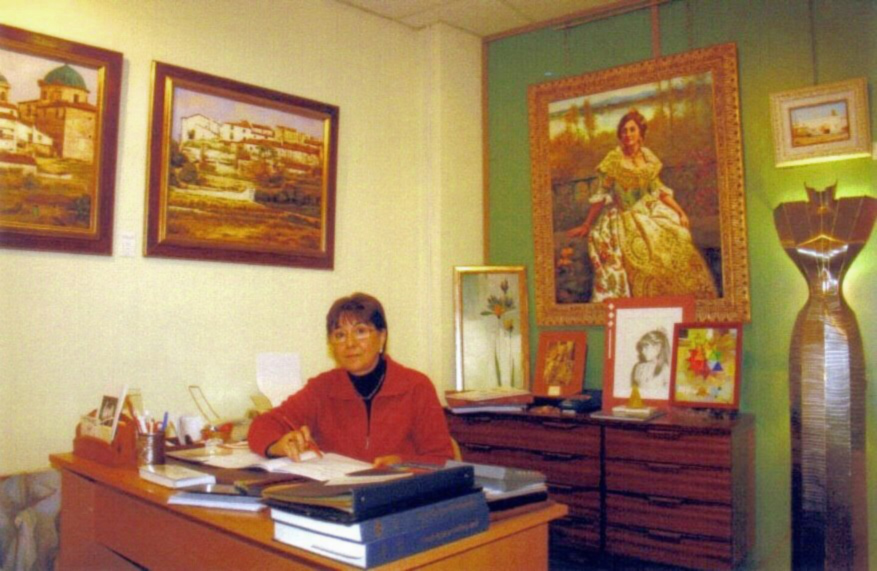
Español: Reduccion de ruido y modificacion de contraste